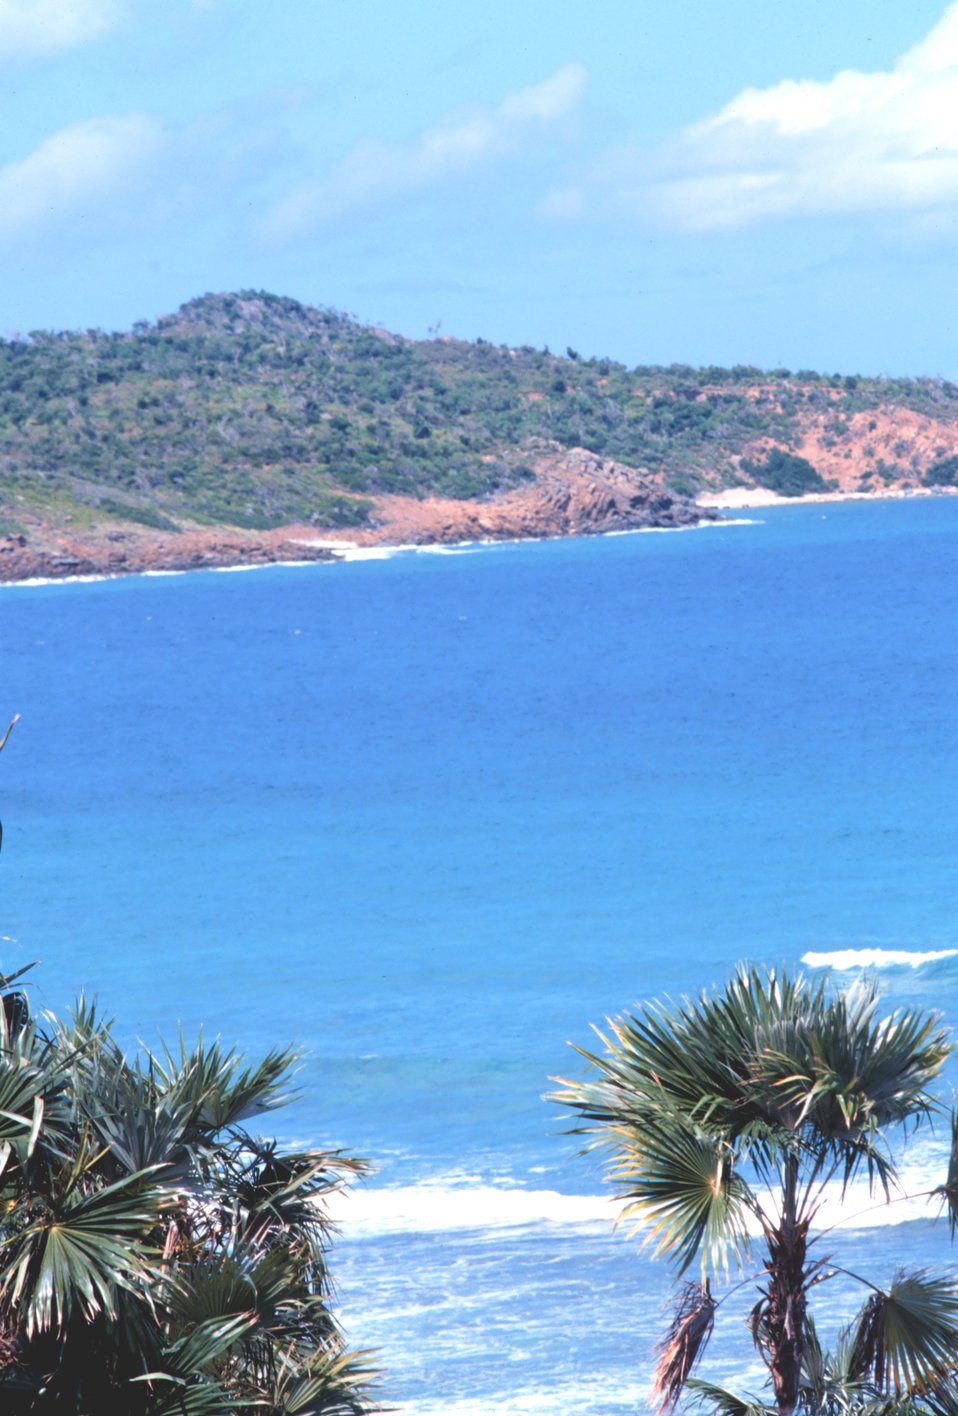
Looking across Pillsbury Sound to Thatch Cay